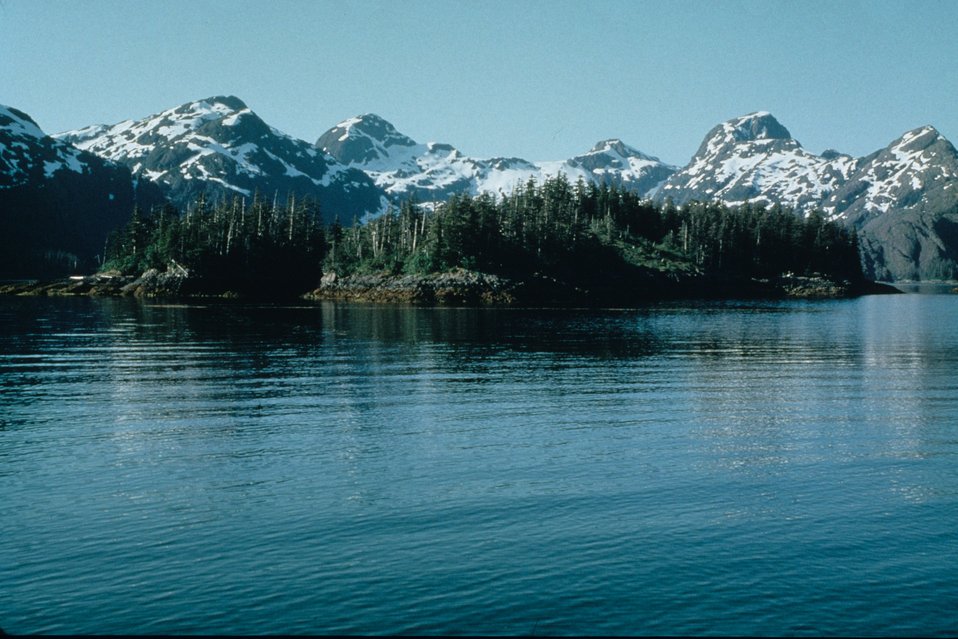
Rugged Alaska shoreline